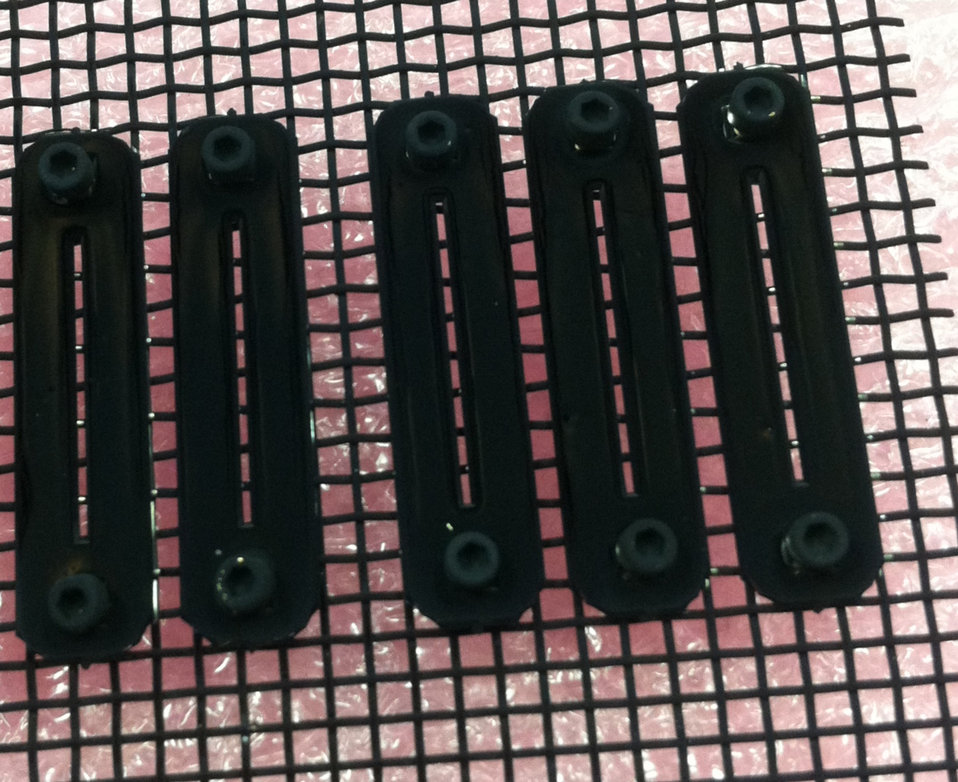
Custom Chips Coated with Carbon Nanotubes

NIST made custom chips coated with carbon nanotubes -the world's darkest material - to absorb scattered light in an experimental balloon-borne spectrometer.